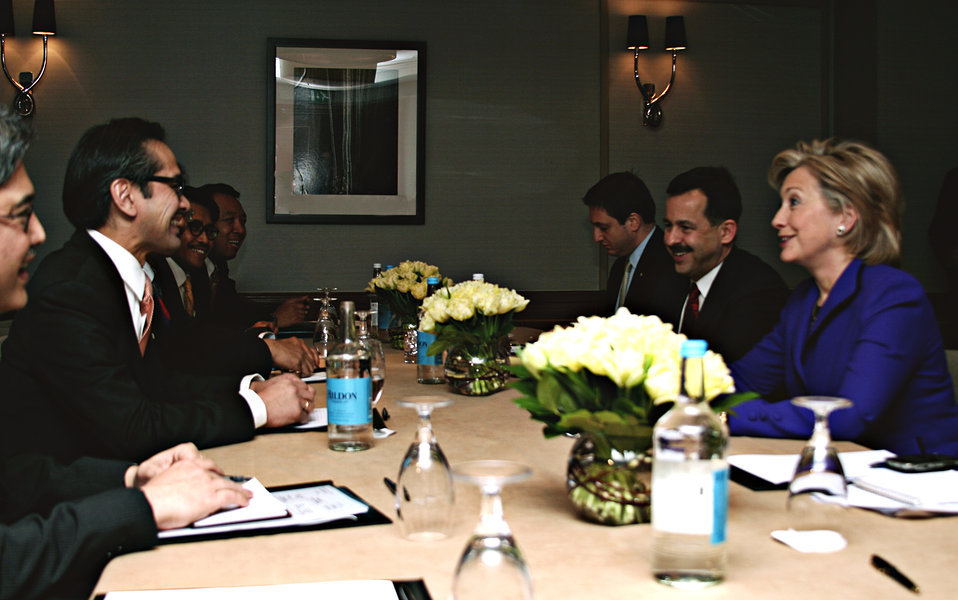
Secretary Clinton Meets With Indonesian Foreign Minister Natalegawa in London

U.S. Secretary of State Hillary Rodham Clinton meets with Indonesian Foreign Minister Marty Natalegawa in London, January 27, 2010.